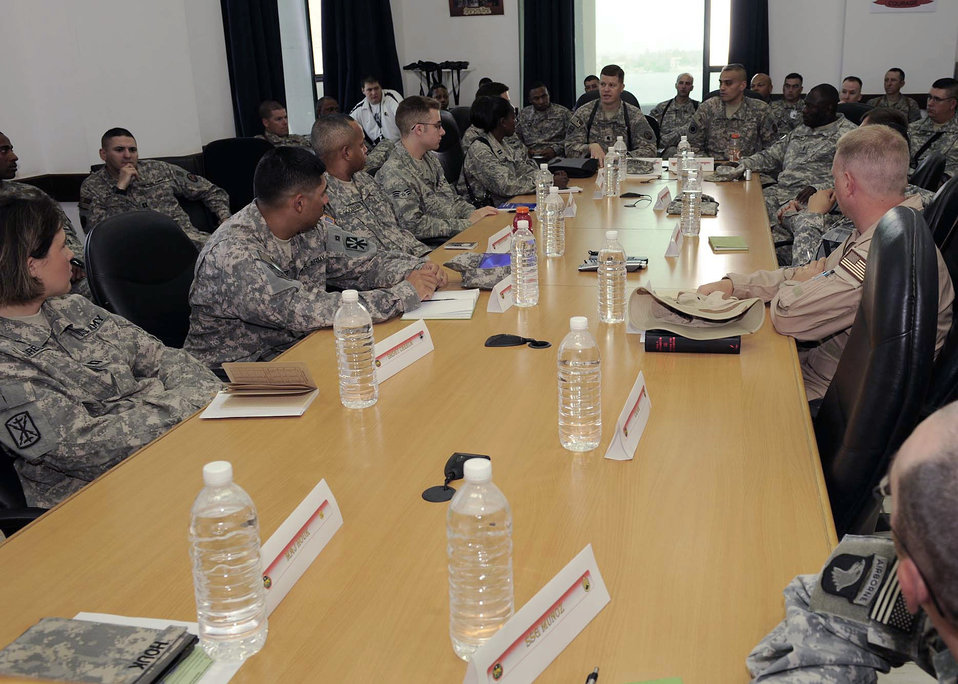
Joint airspace conference takes place in Iraq

Members of Multinational Corps-Iraq came together at the Joint Airspace Interoperability Synchronization Conference May 30 at Camp Victory, Iraq. Key players from the Army, Air Force and civilians from all over Iraq and the Combined Air Operations Center discuss the complexities of managing the joint air picture and how to improve joint tactics, techniques and procedures.